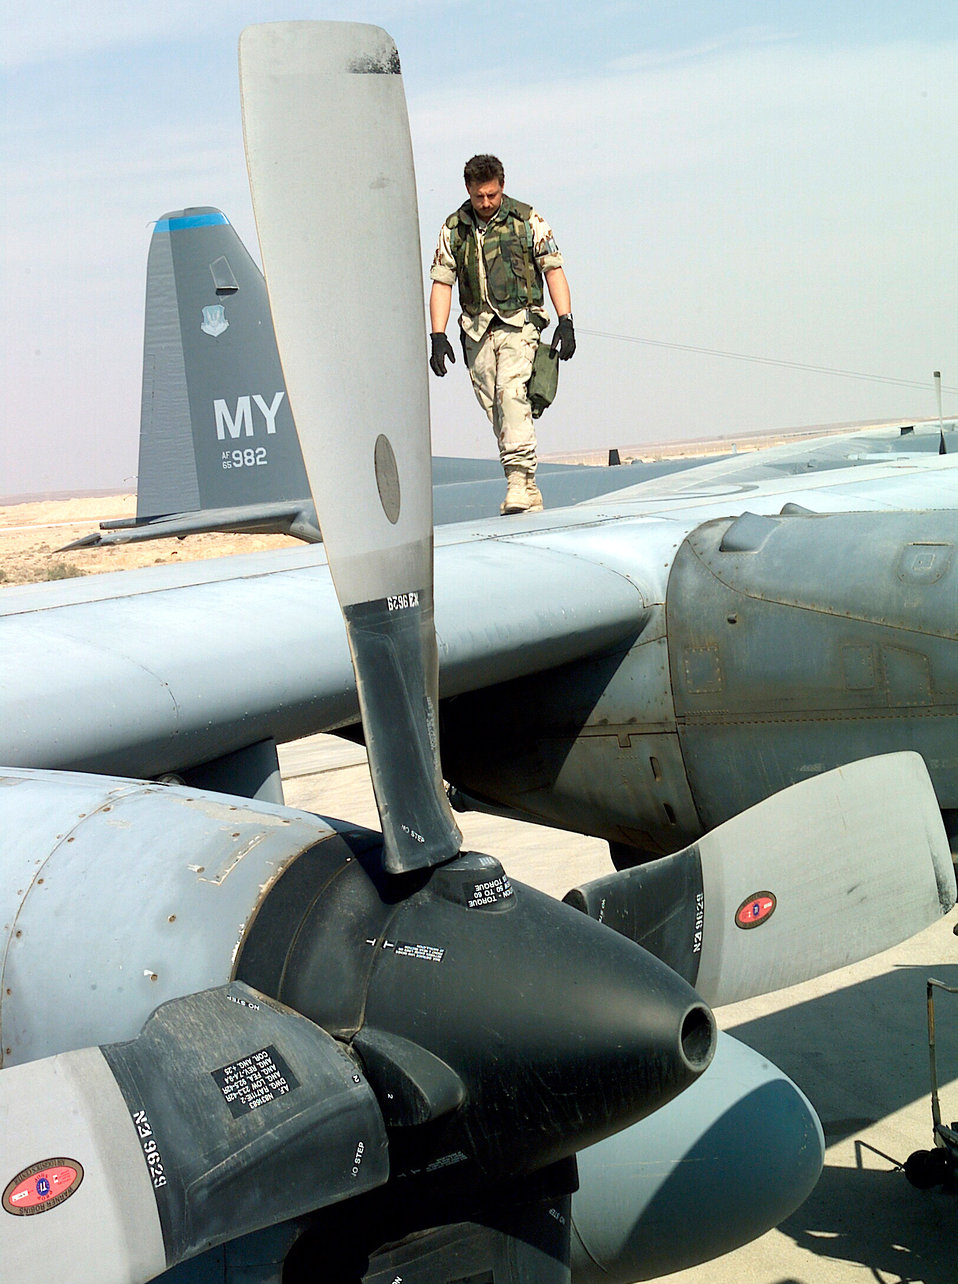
Post-flight check

OPERATION IRAQI FREEDOM -- A crewmember from the 71st Expeditionary Rescue Squadron performs a post-flight maintenance inspection on an HC-130 Hercules at a forward deployed Operation Iraqi Freedom location.